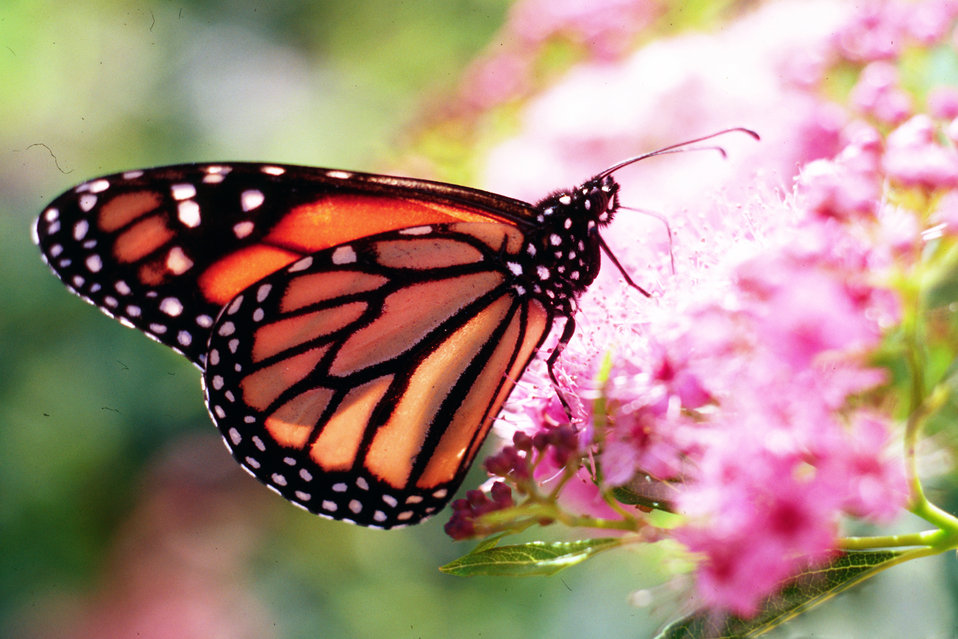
A monarch butterfly collects nectar from a flower. Buttrflies are one of nature’s many pollinators for flowers and crops and are crucial in production for fruits and vegetables.